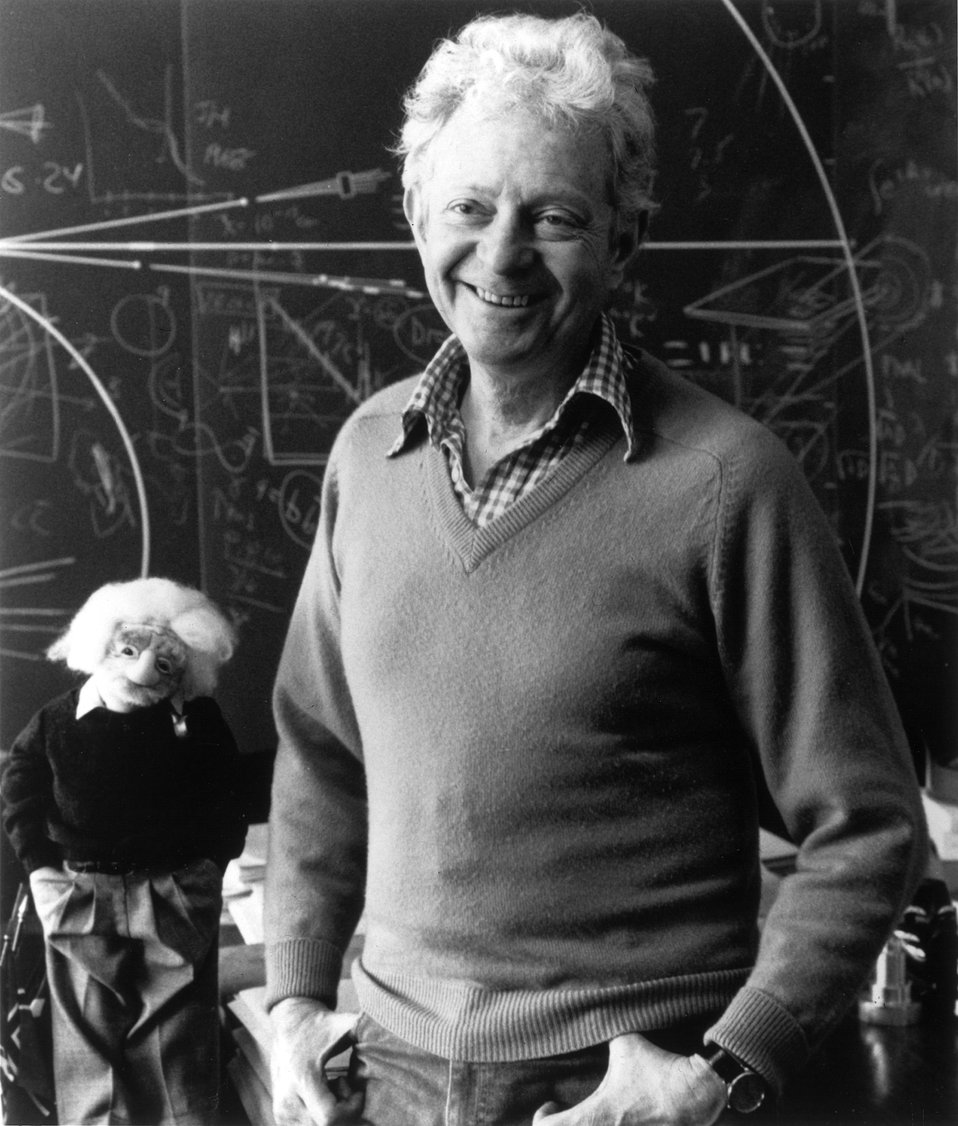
Nobel Prize for Physics, 1988. Dr. Leon M. Lederman, Director Emeritus at Fermi National Laboratory, Batavia, Illinois